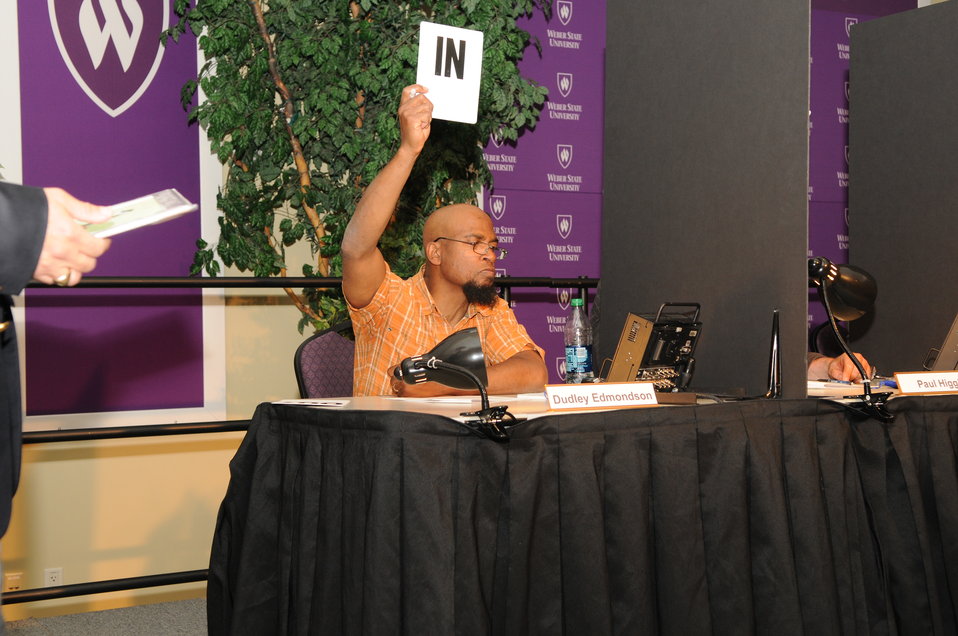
Judging

The U.S. Fish & Wildlife Service sponsored the 2012 Federal Duck Stamp Art Contest September 28 and 29 in Ogden, Utah, at Weber State University. A panel of five judges was responsible for choosing the art work used to design the 2013-2014 Migratory Bird Hunting and Conservation Stamp.